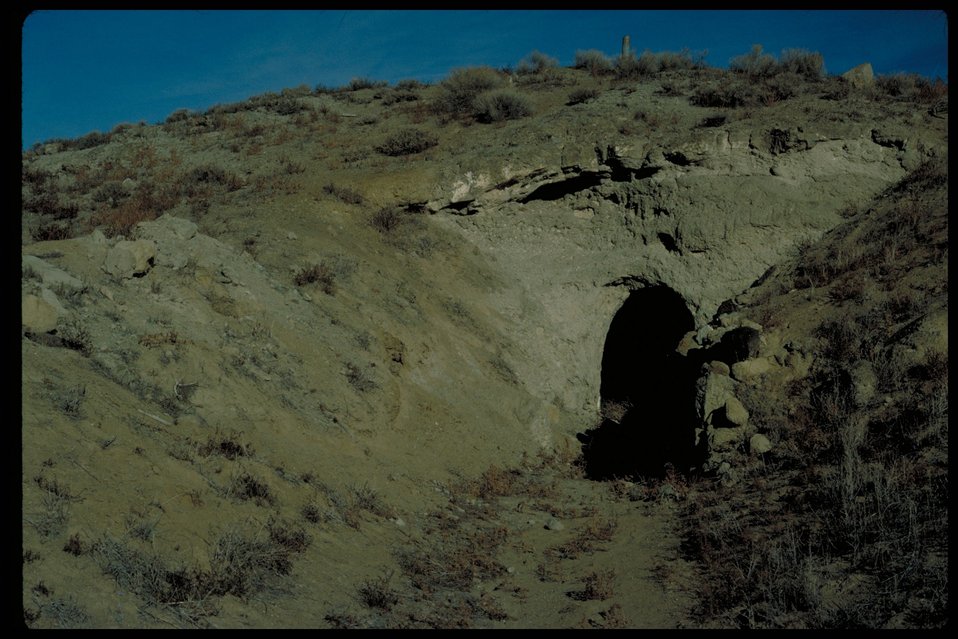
Oregon Trail Mountain Ranch near Sinker Creek Lower Snake River District